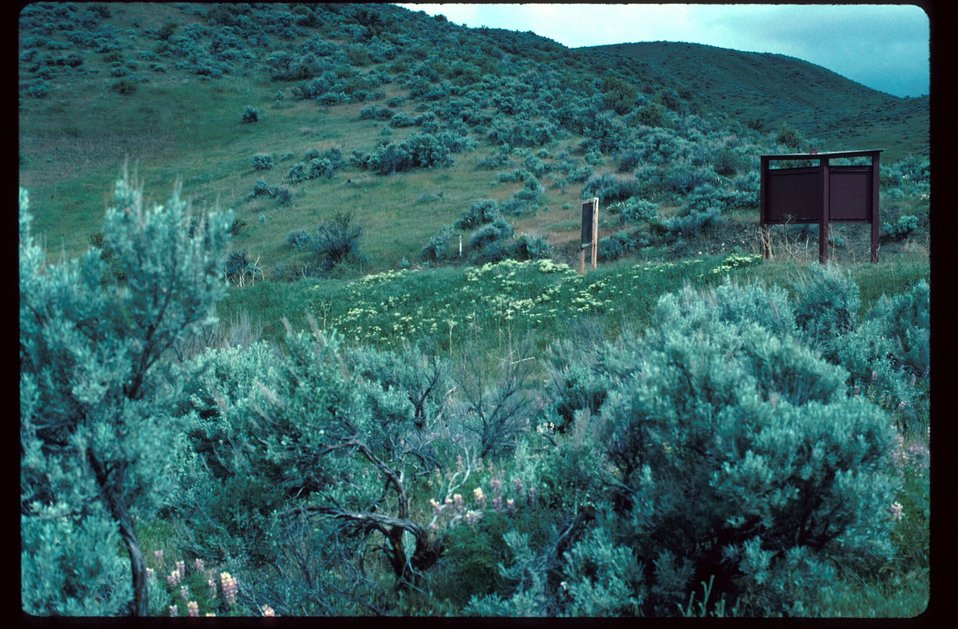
Range Restoration Project